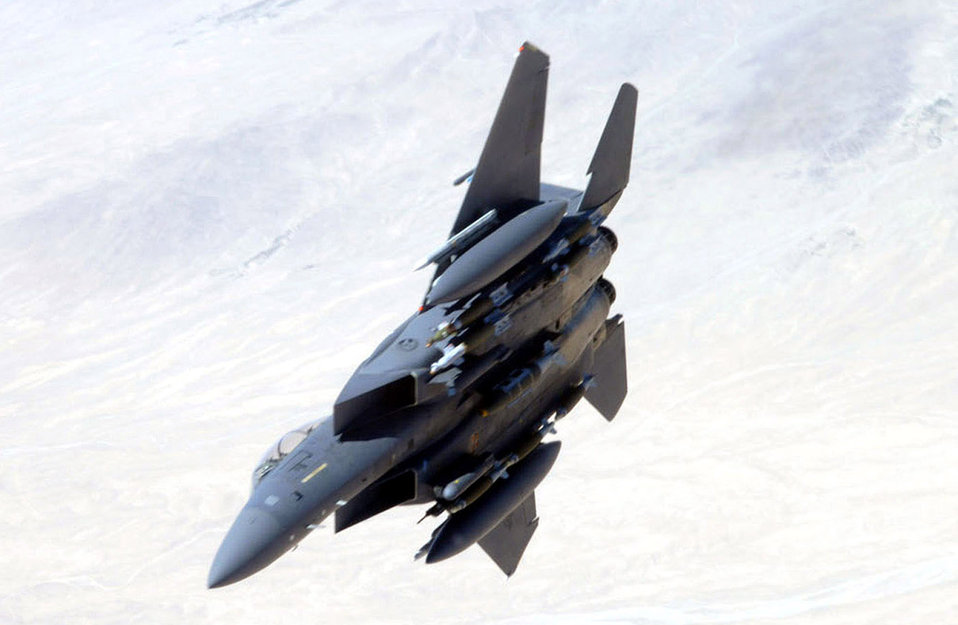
Feb. 6 airpower summary: F-15s hit enemy combatants

Air Force F-15E Strike Eagles continue to bring air power to areas of Afghanistan, hitting multiple enemy targets.